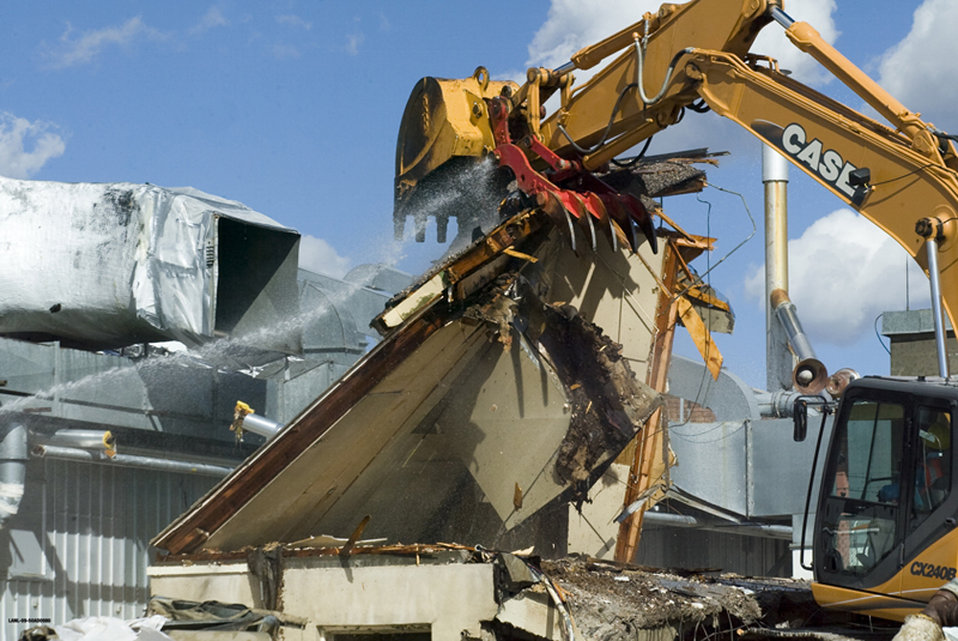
A Safe End to Cold War Facilities

Recovery Act funding was used for the demolition of 24 buildings at Technical Area 21 at Los Alamos National Laboratory.